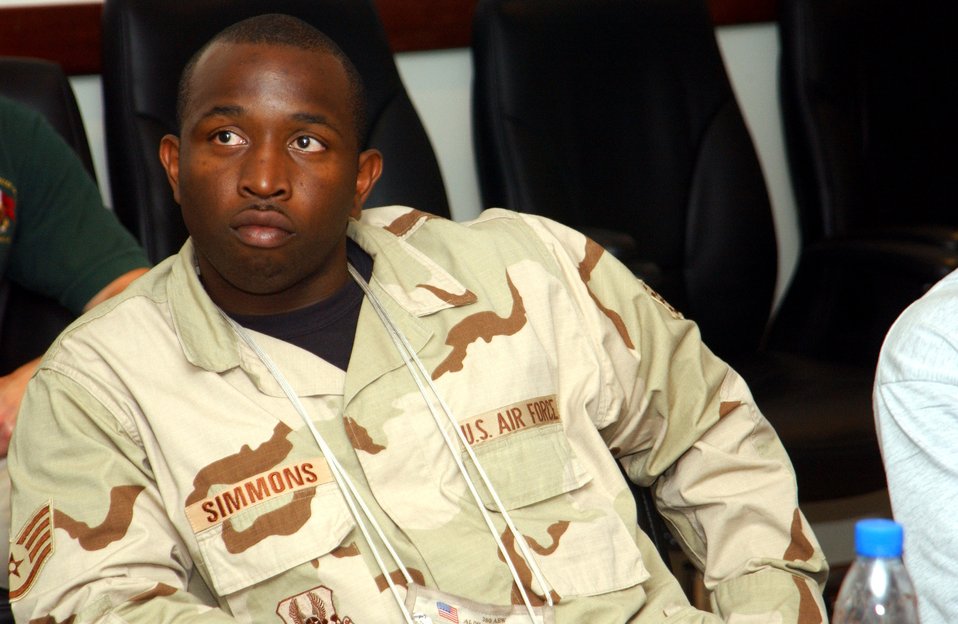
NCO completes in-theater advocate training

Staff Sgt. Kino Simmons listens to a paralegal talk about the legal issues involved with being a victim advocate Nov. 29 at a Southwest Asia base.